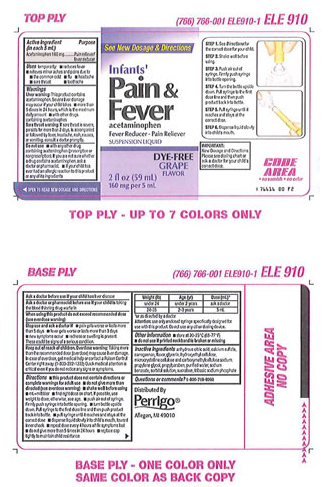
Recalled - Acetaminophen infant suspension liquid

November 1, 2013 – Product Recall – Perrigo Initiates Nationwide Voluntary Product Recall of Acetaminophen Infant Suspension Liquid, 160 Mg/5 Ml, Due to a Potential Defect with the Co-packaged Oral Syringe.